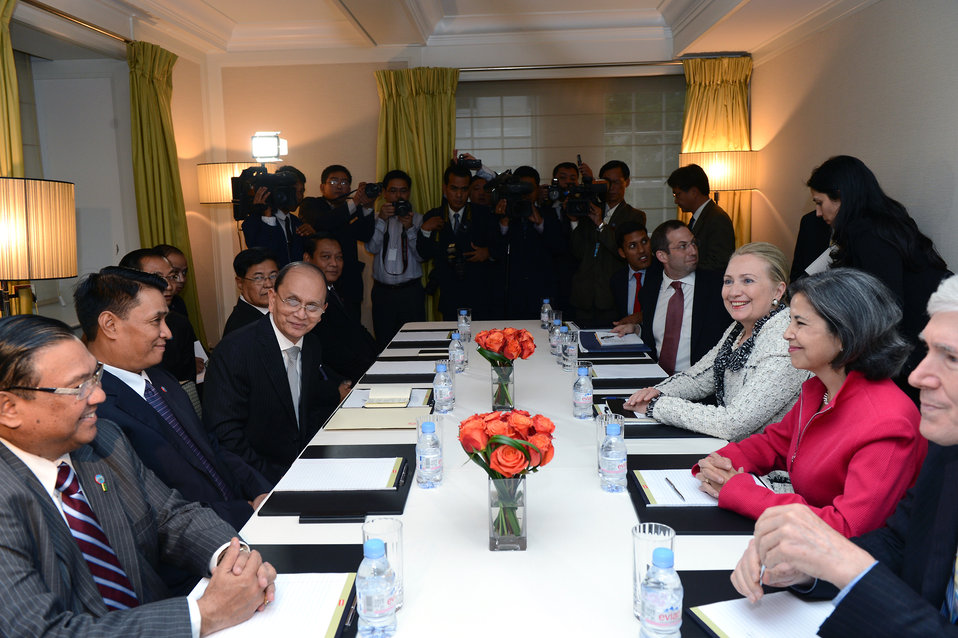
Secretary Clinton Meets With Burmese President Sein

U.S. Secretary of State Hillary Rodham Clinton meets with Burmese President Thein Sein in New York, New York on September 26, 2012.